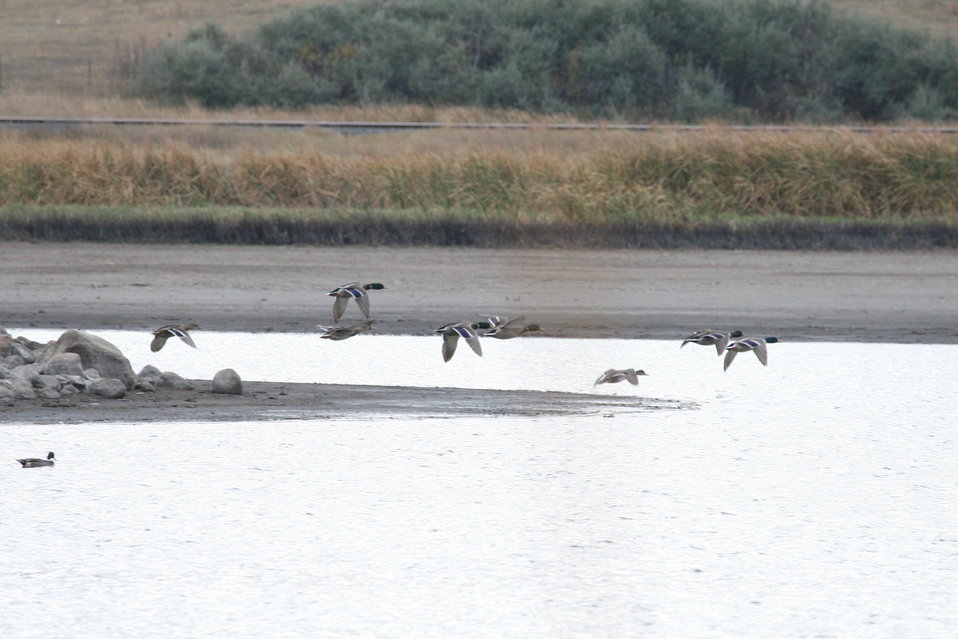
Fall on the Refuge - Mallards in Flight

The Mallard inhabits a wide range of habitat and climates, from Arctic Tundra to subtropical regions.

It is omnivorous and very flexible in its food choice.